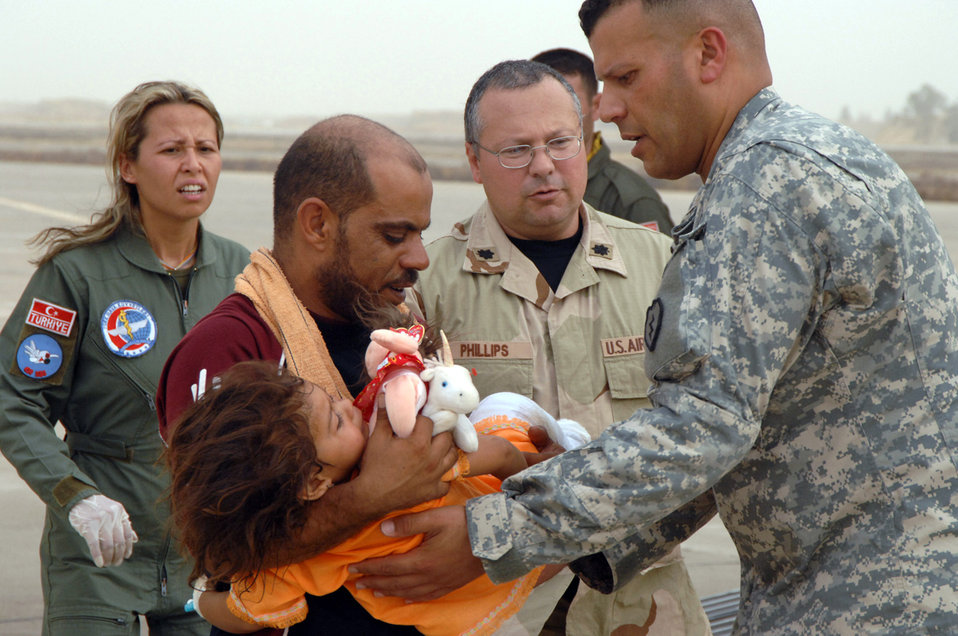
Airmen lead multinational effort for Iraqi bombing victims

Lt. Col. (Dr.) Michael Phillips (center) and Army Sgt. Ramy Elmery (right) aid a man in transferring an injured girl to a Turkish medical aircraft while a Turkish air force medical team member looks on July 8 at Kirkuk Air Base, Iraq. The girl was hurt in the July 7 market bombing in Tuz Khurmato, Iraq. Colonel Phillips is assigned to the 506th Expeditionary Medical Squadron. Sergeant Elmery is assigned to the 3rd Infantry Brigade Combat Team, Headquarters Headquarters Company. Airmen from the 506th Air Expeditionary Group worked with Iraqi medical providers and Turkish army and air force members to receive, transfer and aerovac almost 30 injured Turkmen civilians and family members to the Turkish capital city of Ankara for further treatment.